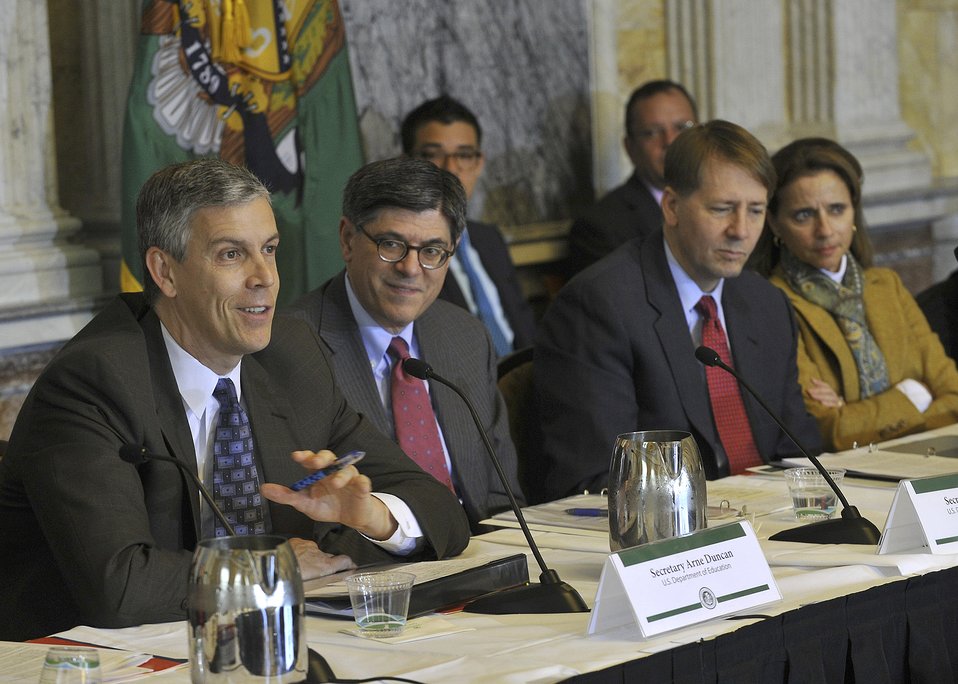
Meeting of the Financial Literacy and Education Commission (FLEC) focused on higher education decision-making

On October 23, 2013, Secretary Lew was joined by Secretary of Education Arne Duncan, Director of the Consumer Financial Protection Bureau Richard Cordray, and Acting Treasury Deputy Secretary Mary Miller for a discussion centered on one of the clearest ways to grow and strengthen the middle class: expanding access to higher education.